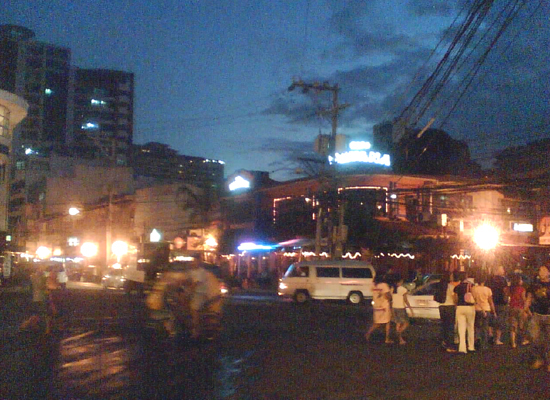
Night scene at Adriatico corner Remedios in Malate, Manila taken by Dean M. Bernardo on 18 October 2006 for public domain use on Wikipedia